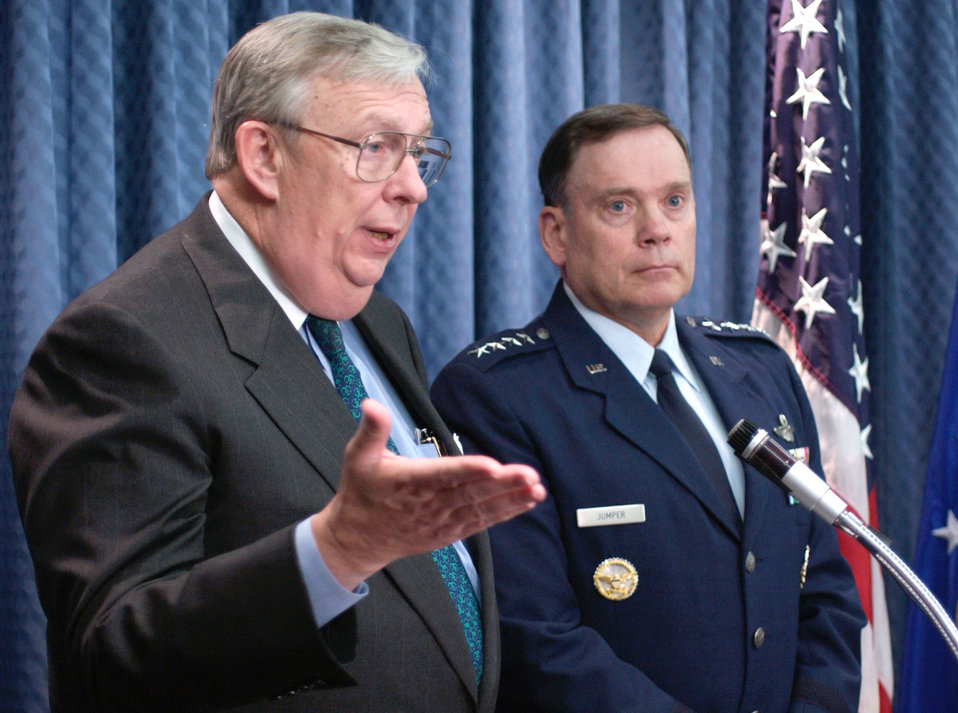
Roche and Jumper

WASHINGTON -- Secretary of the Air Force Dr. James G. Roche (left) and Air Force Chief of Staff Gen John P. Jumper announce a broad series of directives aimed at addressing the climate of the U.S. Air Force Academy during a press briefing at the Pentagon on March 26. Roche said the directives are designed to ensure the Academy is a safe, secure environment for cadets who are being trained as future Air Force leaders.